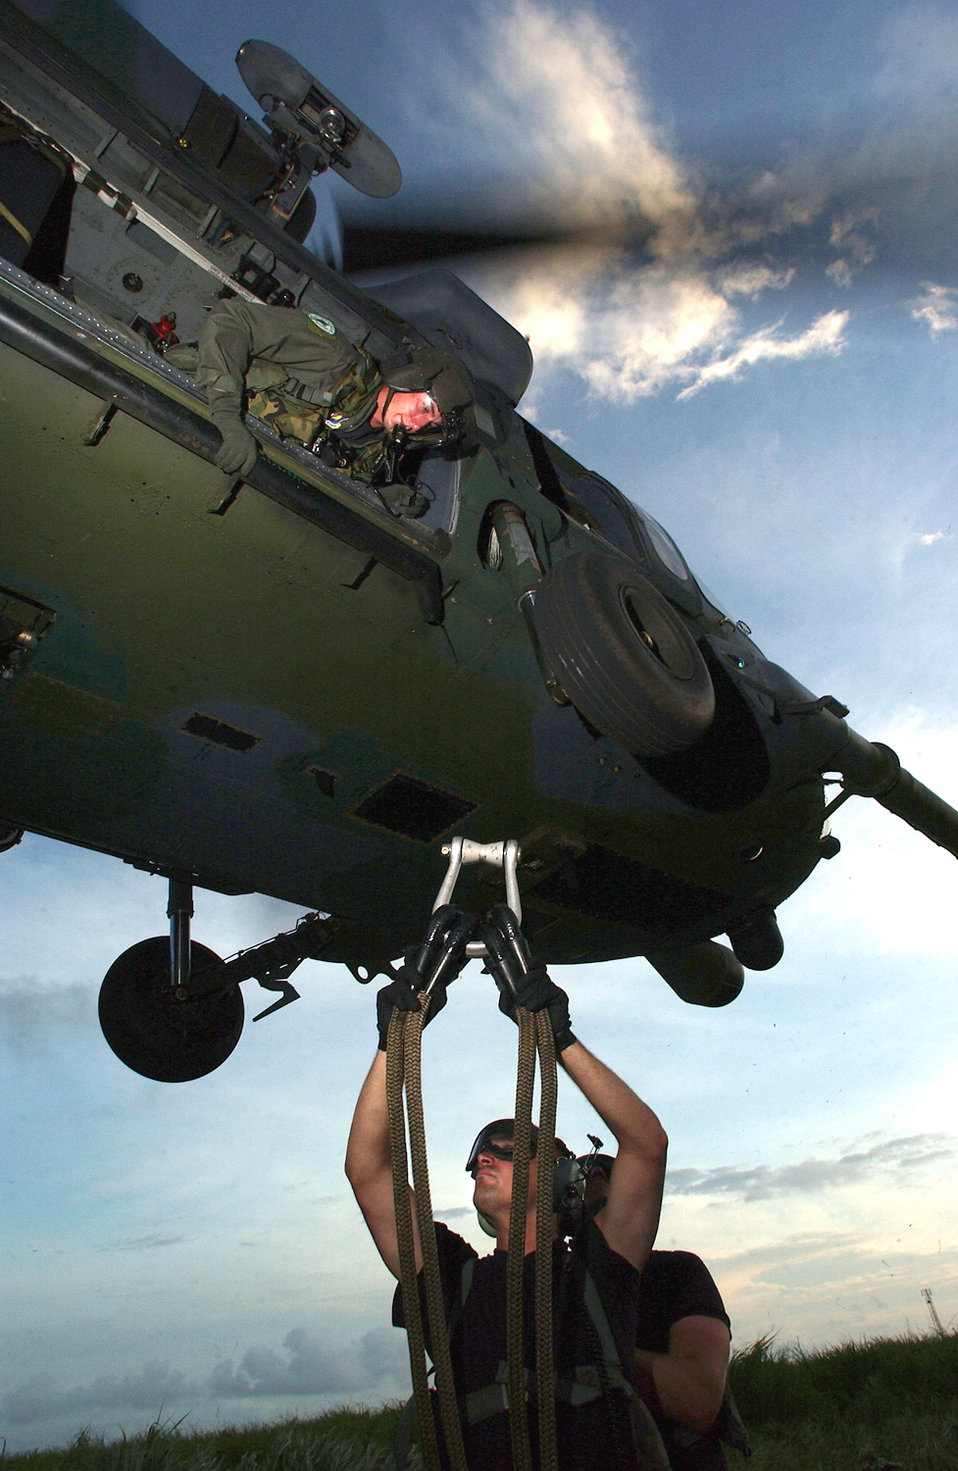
Hook me up

LUNGI, Sierra Leone -- Staff Sgt. Michael Griffin observes Staff Sgt. Joel Ellis attach a hook on his HH-60G Pave Hawk during external slingload training. Both Griffin and Ellis are from Naval Air Station Keflavik, Iceland, and are currently serving with the 398th Air Expeditionary Group here.